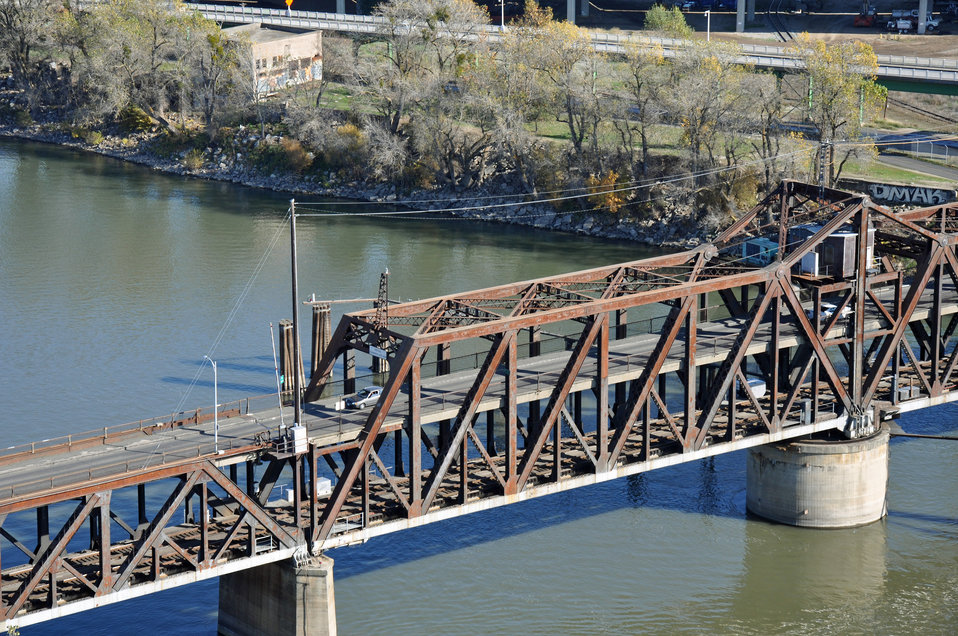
I St Bridge

Across the Sacramento River in downtown Sacramento

USFWS Photo/Steve Martarano

Photo taken from the CalSTRS Building in West Sacramento